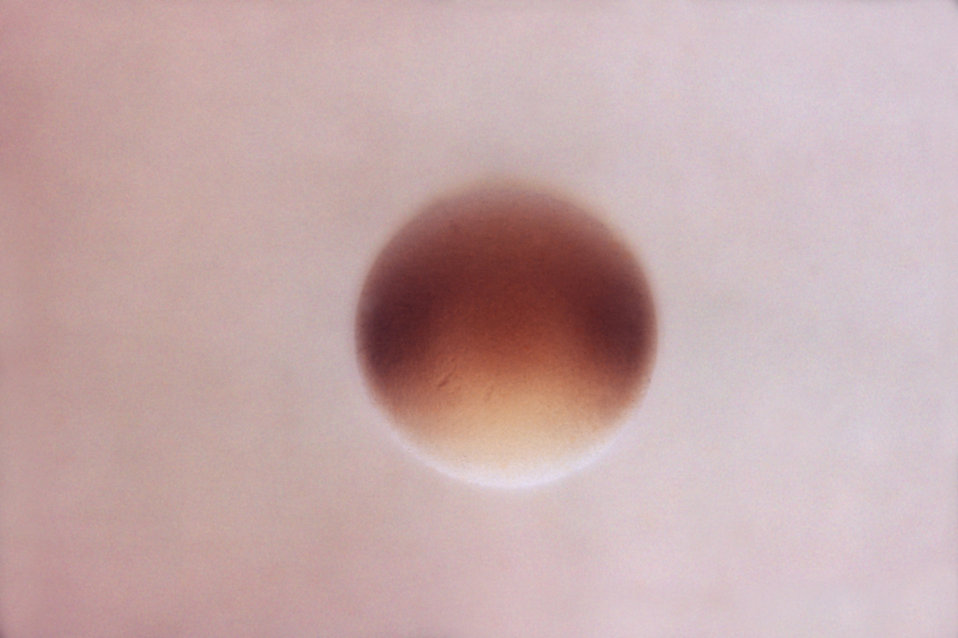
This is an enlarged view of a Type-IV, laboratory-grown Neisseria gonorrhoeae bacterial colony.